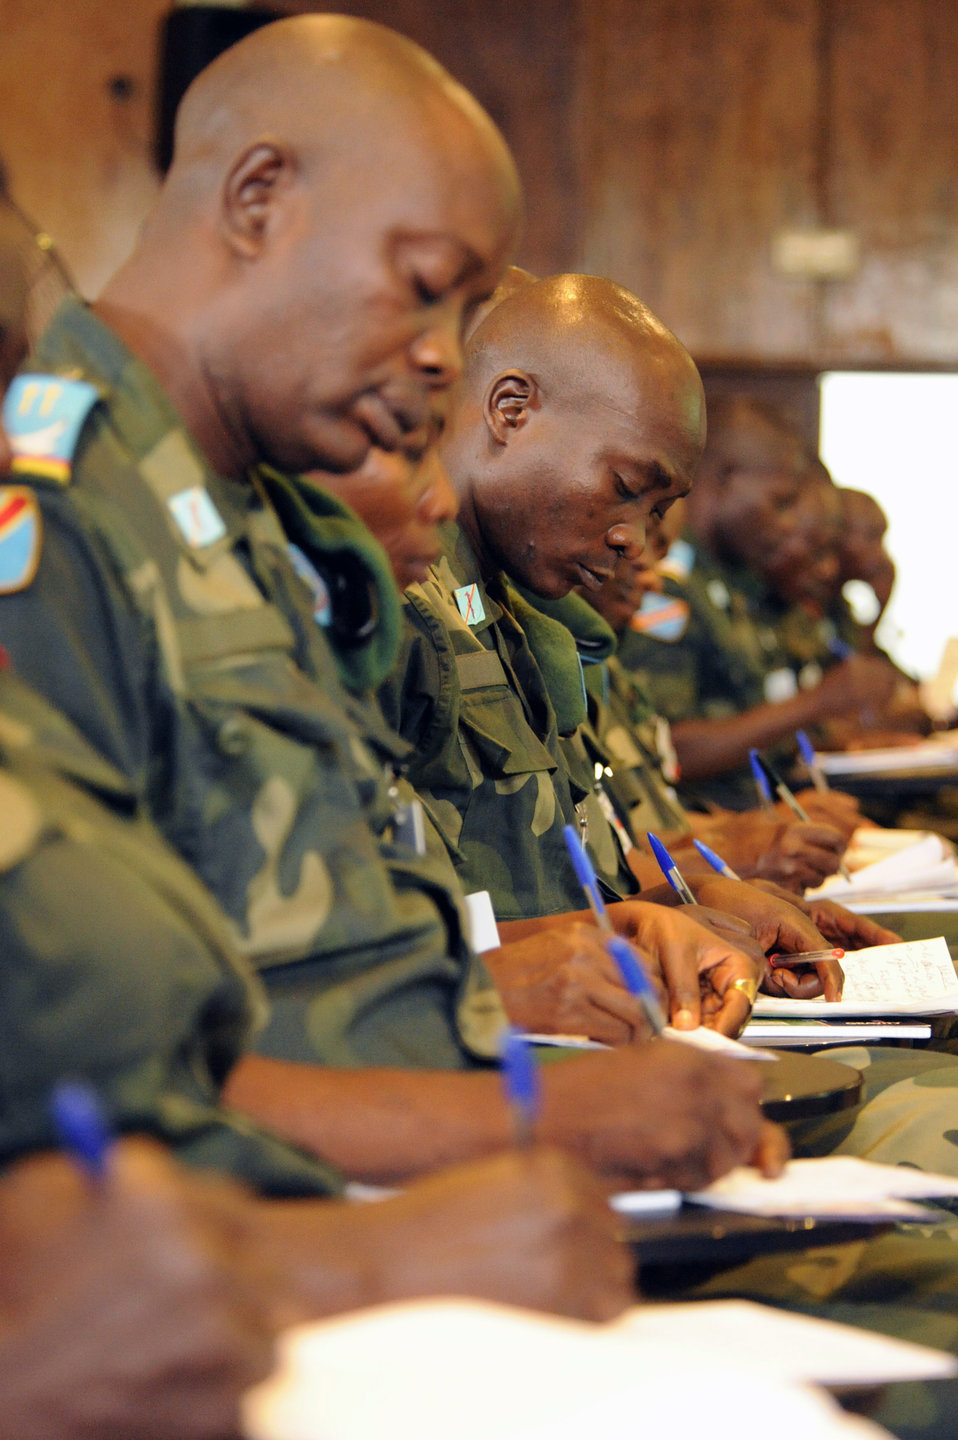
Exchanging aeromedical evacuation training across the continents

Military members representing the Democratic Republic of the Congo take notes while attending an academic course during MEDLITE 11, April 26, 2011, at Kinshasa, Democratic Republic of the Congo. MEDLITE 11 is a joint medical exercise focused on aeromedical evacuation, to improve the readiness of U.S. Air Force and DRC personnel.